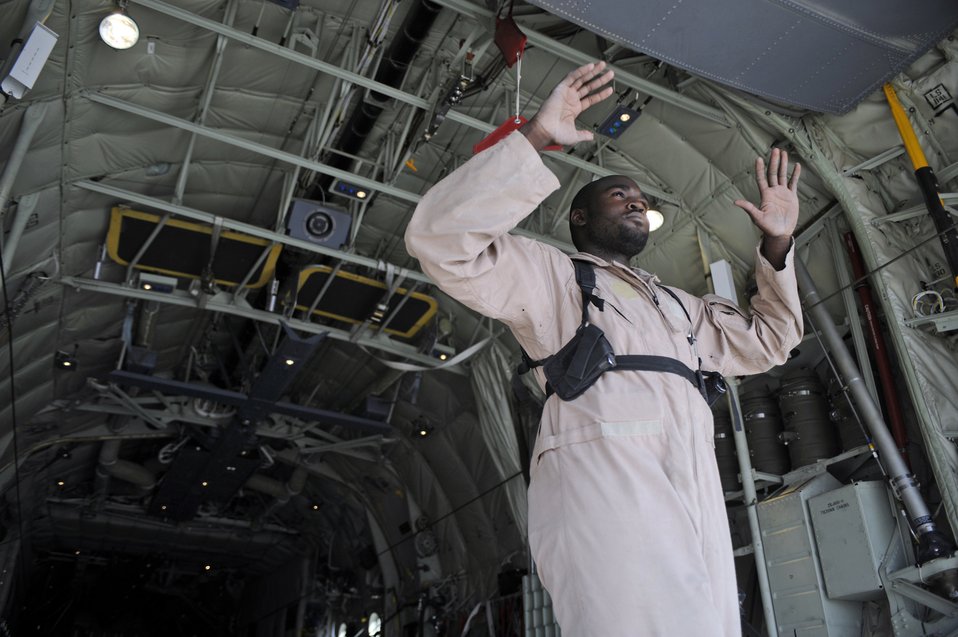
Airdrop fuels austere Afghan locations

Staff Sgt. Brian Commodore directs the movement of pallets into the cargo bay of a C-130J Super Hercules, in preparation for a night airdrop to deliver JP-8 fuel to troops on the ground July 17 over southwestern Afghanistan. Sergeant Commodore is a loadmaster assigned to the 772nd Expeditionary Airlift Squadron. Sergeant Commodore is deployed from the 41st Airlift Squadron, Little Rock Air Force Base, Ark.